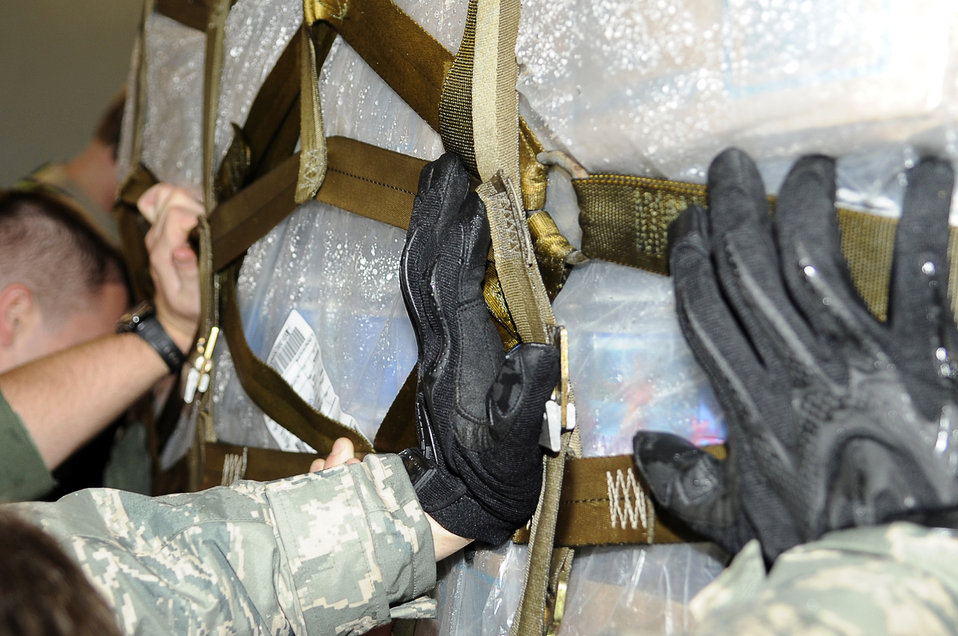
Airmen at Yokota deliver water in support of Japan relief efforts

Airmen load a pallet of water onto a C-17 Globemaster III March 21, 2011, at Yokota Air Base, Japan. Crews unloaded the water and other relief items at Sendai Airport as American forces work closely with their Japanese counterparts to aid the people of Japan in the aftermath of an 8.9 earthquake, which hit Japan March 11.